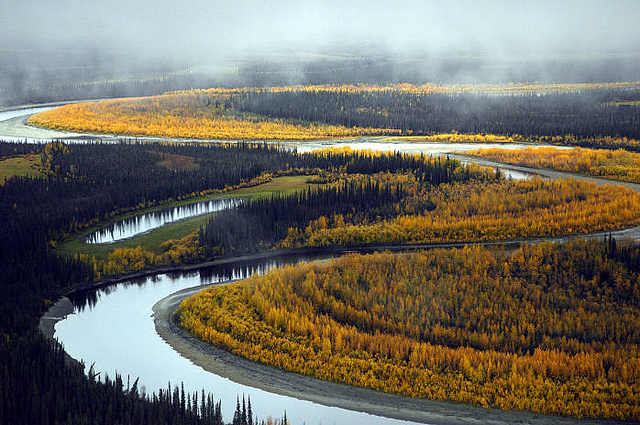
south fork, Koyukuk river

Koyukuk National Wildlife Refuge, AK